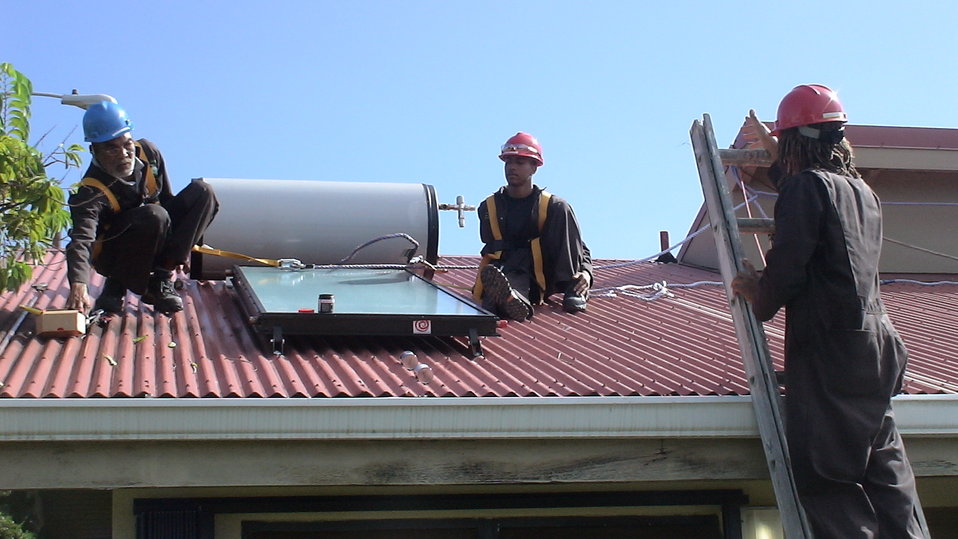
Going Green in the Virgin Islands 1

VIRGIN ISLANDS - Students in the solar water heating installation training program installing solar water heaters on homes for the elderly on St. Croix.